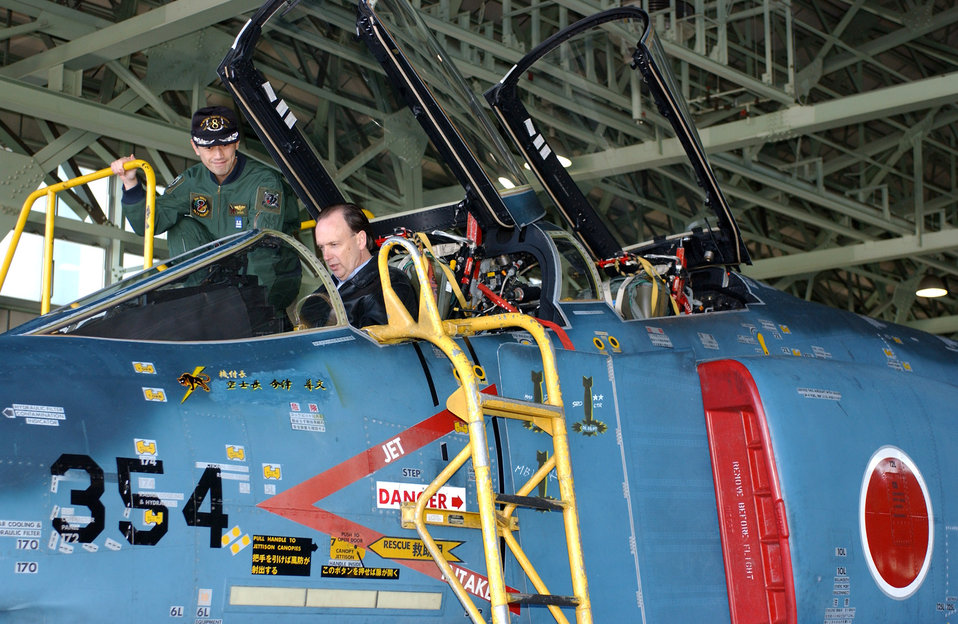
Air Force exploring renewable energy sources

William C. Anderson sits in the cockpit of a Japanese Air Self Defense Force F-4 Feb. 22 at Misawa Air Base, Japan. Mr. Anderson is the assistant secretary of the Air Force for Installation, Environment, and Logistics and visited Misawa AB Airmen